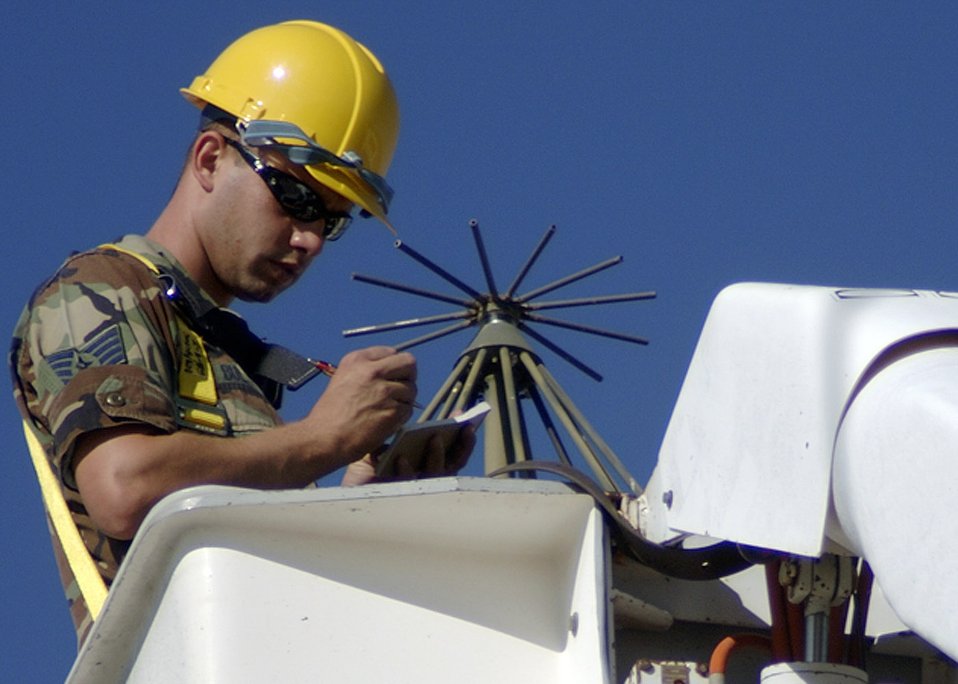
Checking it out

DAVIS-MONTHAN AIR FORCE BASE, Ariz. -- Staff Sgt. Jason Bulgin logs findings while inspecting an AT-197 UHF antenna here. He is part of a team from the 1st Communications Squadron at Langley Air Force Base, Va., that visits here annually to inspect antenna arrays. Sergeant Bulgin is a cable/antenna maintainer.